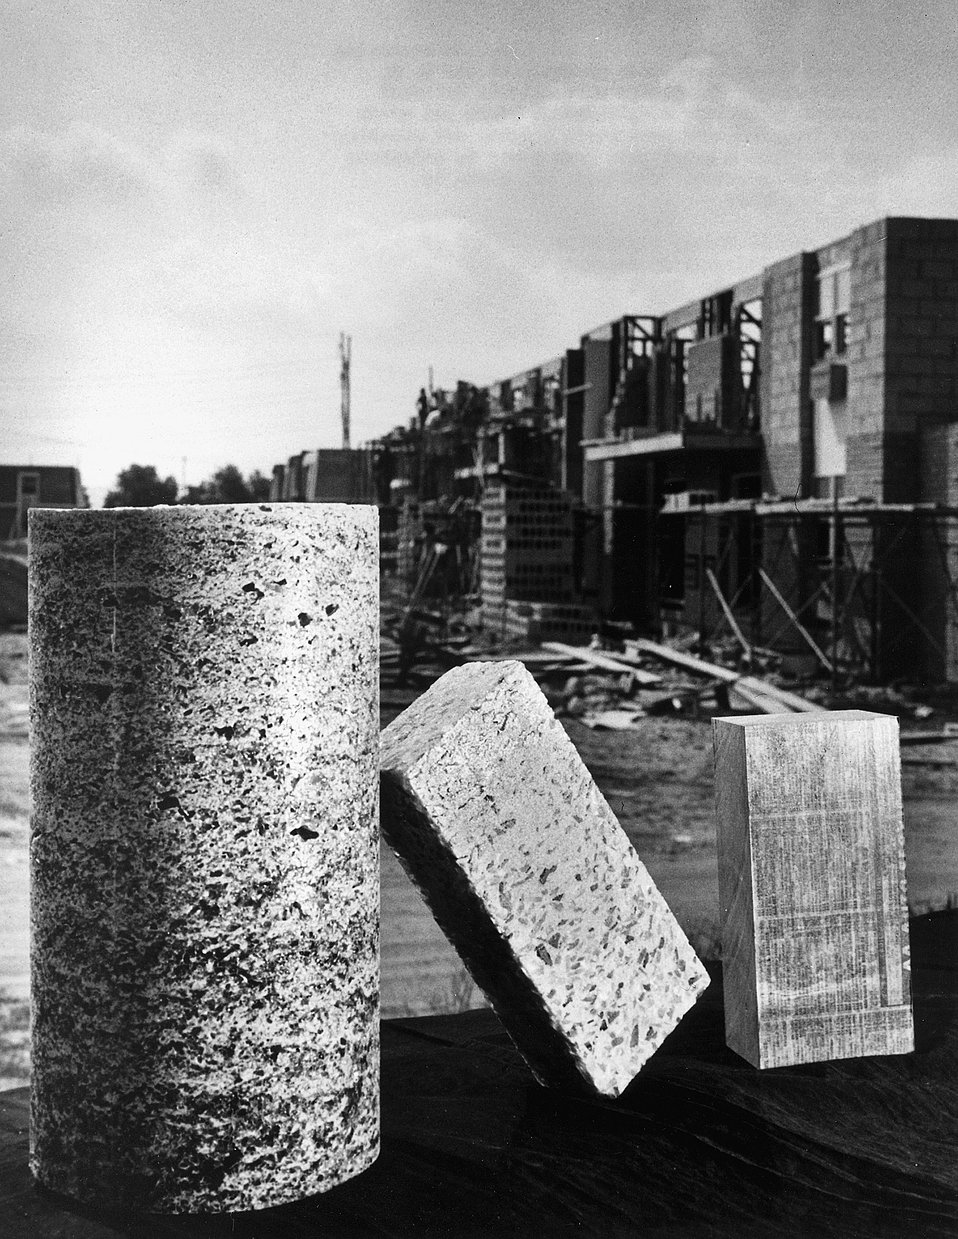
Construction products made from waste products at the Energy Research & Development Administration's Brookhaven National Laboratory include a cylindrical block and brick made from recycled no-deposit bottles and plastic, and at right a brick made from paper (a telephone book) and plastic. c. 1972